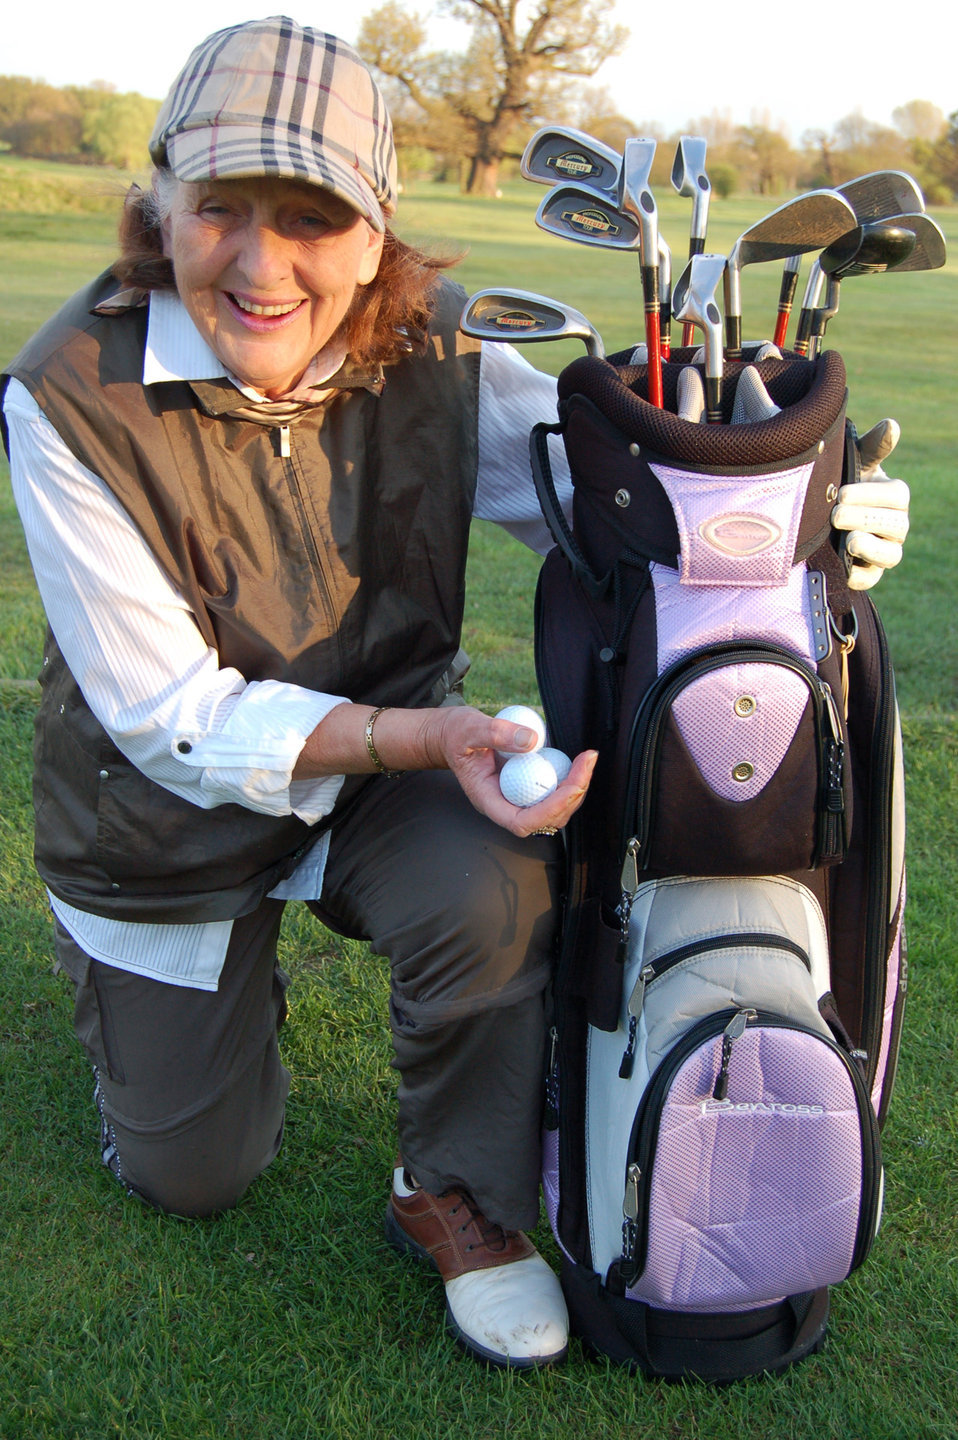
Older lady golfer.